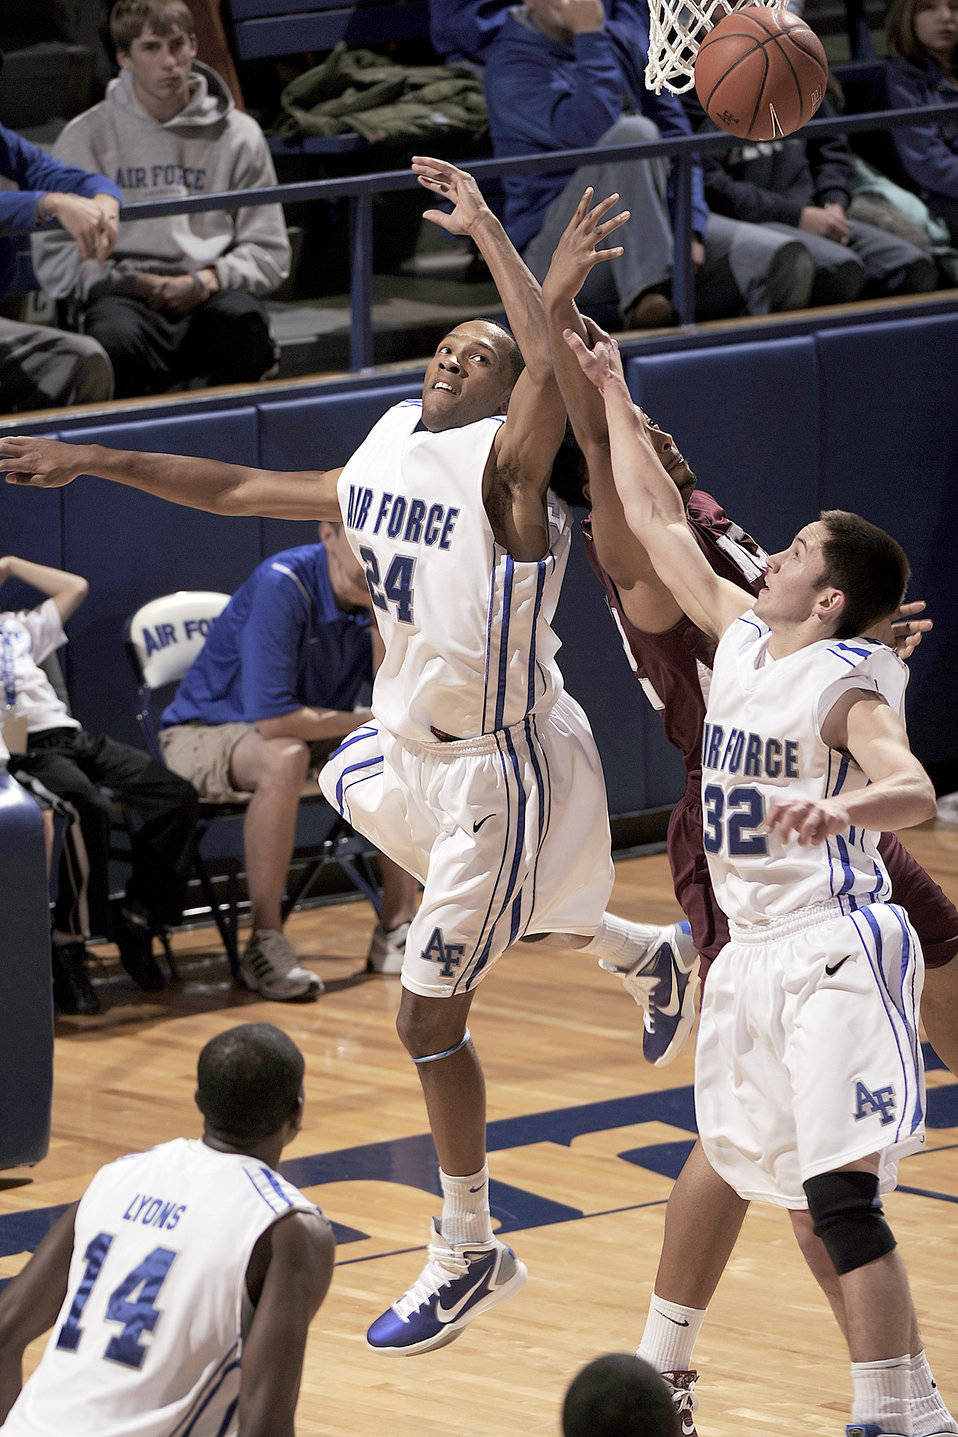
Falcons defeat the Eagles

Air Force Academy Derek Brooks and Shawn Hempsey go up for the rebound as the Falcons defeat North Carolina Central 73-56, Dec 11, 2010, at Clune Arena in Colorado Springs, Colo.